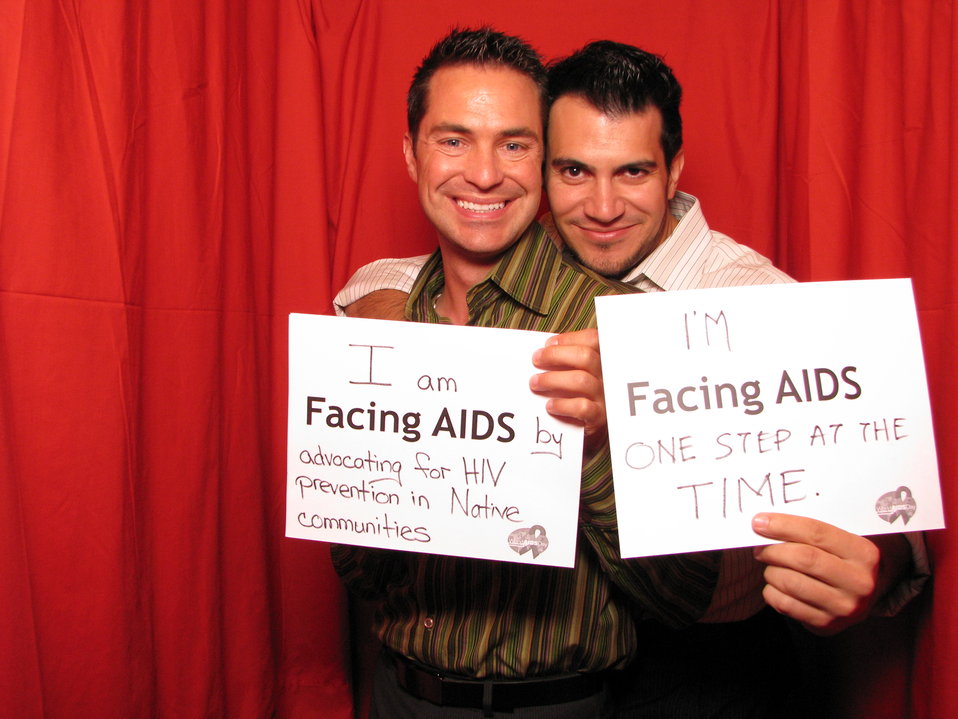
I am FACING AIDS by advocating for HIV prevention in Native communities. I'm FACING AIDS one step at a time.

From the AIDS.gov photo booth at the U.S. Conference on AIDS, September 2010 (Orlando, FL).